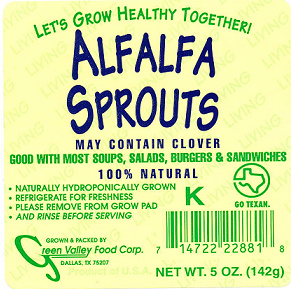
RECALLED - Sprouts

December 31, 2011 - RECALL Green Valley Food Corp. is Expanding Its Recall to Include Additional Products Because of a Possible Health Risk.